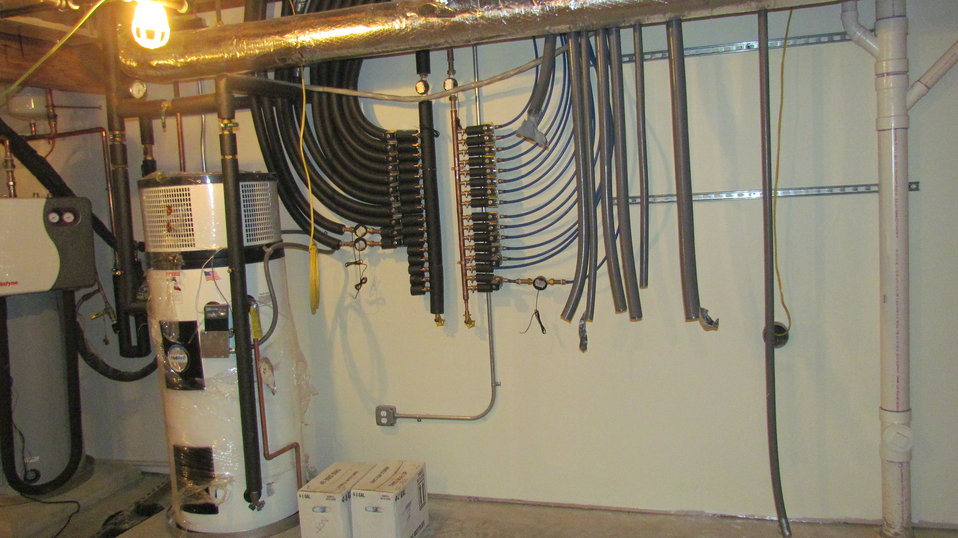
The manifold system that is used to distribute hot and cold water to fixtures within the facility. The blue tubing supplies the cold water and the insulated lines on the left supply hot water to each fixture. A manual valve on each supply line allows the water supply to be easily shut off to each individual fixture without affecting the operation of the other water fixtures within the house. The heat pump water heater is shown in the left of the picture.